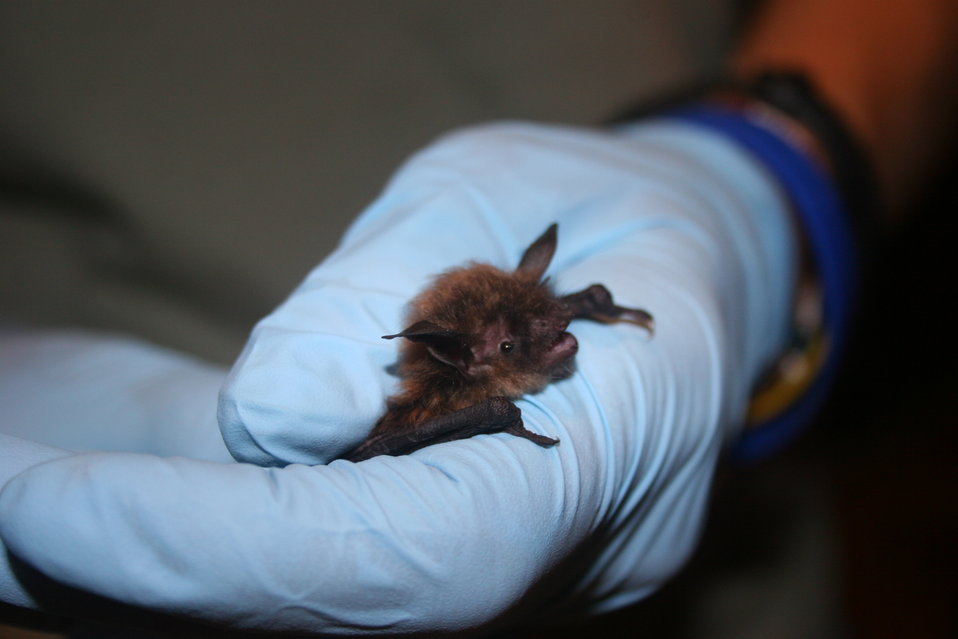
Biologist holds little brown bat.